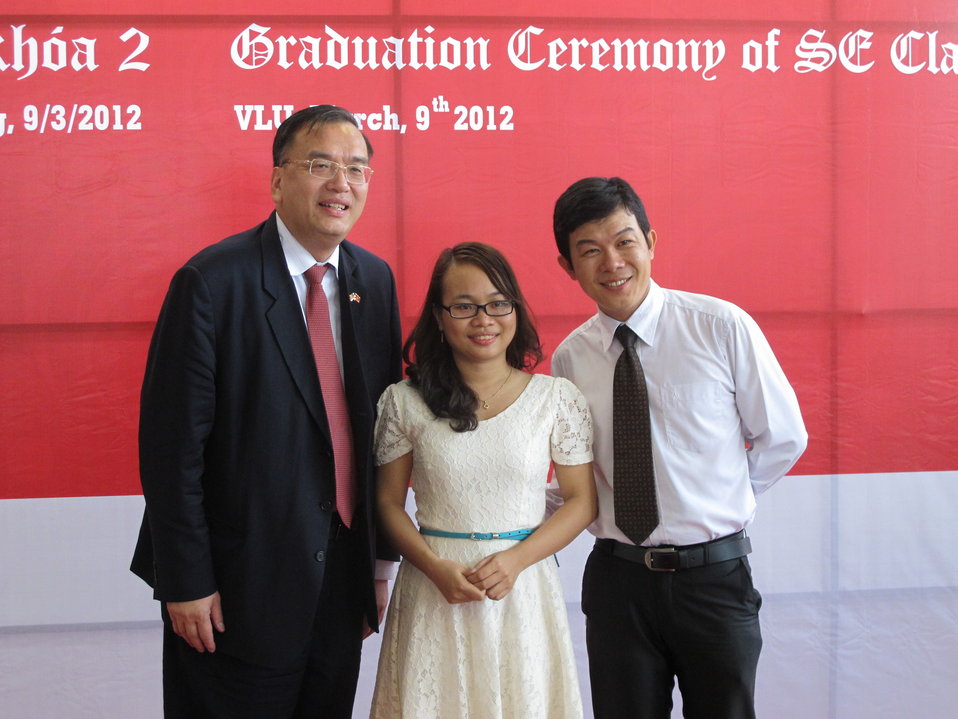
U.S. Counsel General Le Thanh An at the graduation ceremonye certificates in IT at USAID-funded training program